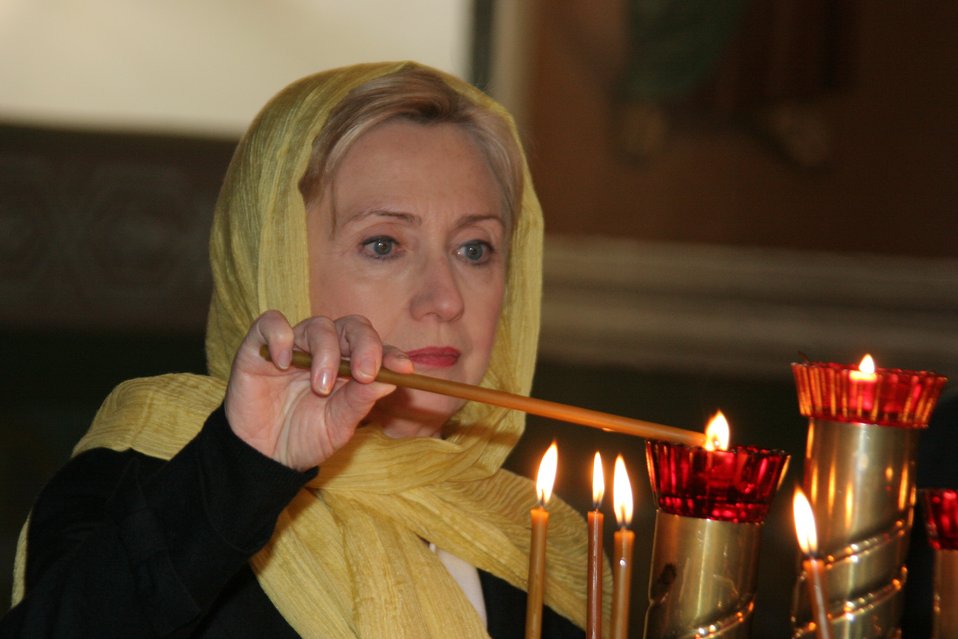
Secretary Clinton Lights a Candle

U.S. Secretary of State Hillary Rodham Clinton lights a candle in the Assumption Cathedral of Kazan in Kazan, Russia October 14, 2009.